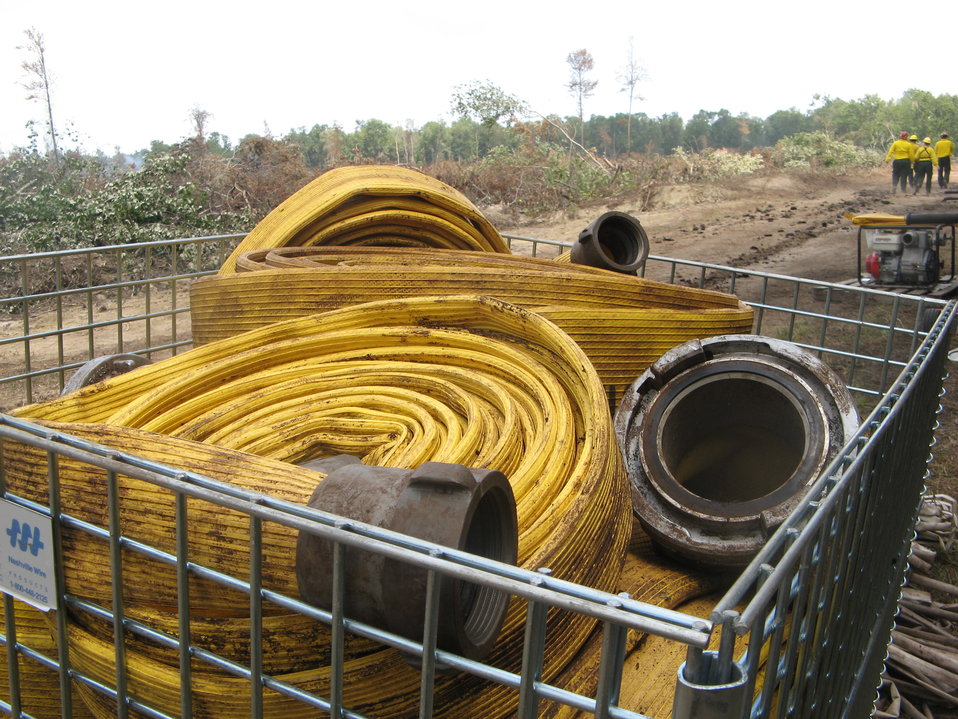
Basket of hose

Suffolk, VA, August 2011: Thousands of feet of fire hose was used to transport water on the Lateral West Fire burning on Great Dismal Swamp National Wildlife Refuge.